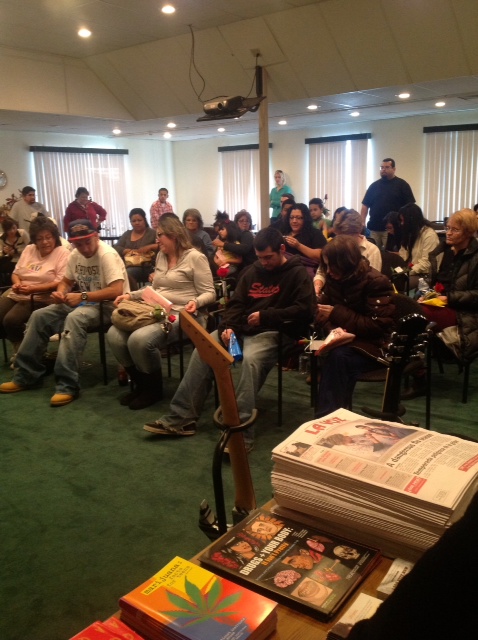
HIKE's National Drug Facts Week 2013

Lakewood, Co. Shatter The Myths Event- February 2, 2013. Speakers included Mita Johnson President of Colorado Association of Addiction Professionals and CEO Behavioral Health Resources, LLC, Thea Wessel with Women's Rise Re-Entry Clinician at Denver County Jail, Marguerite Ham from Eye of the Storm Foundation, and Francisco Cordova and Lakewood CO. Councilman Pete Roybal. Photos provided by Justine Hurtado